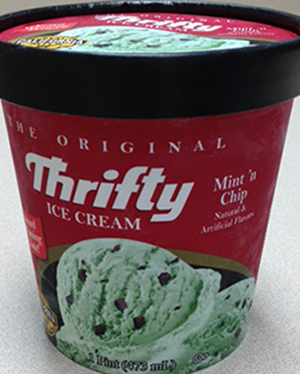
RECALLED – Ice Cream

June 4, 2014 – Product Recall – Rite Aid Voluntarily Recalls 16 oz. Pints of Mint ‘N Chip Thrifty Ice Cream
.